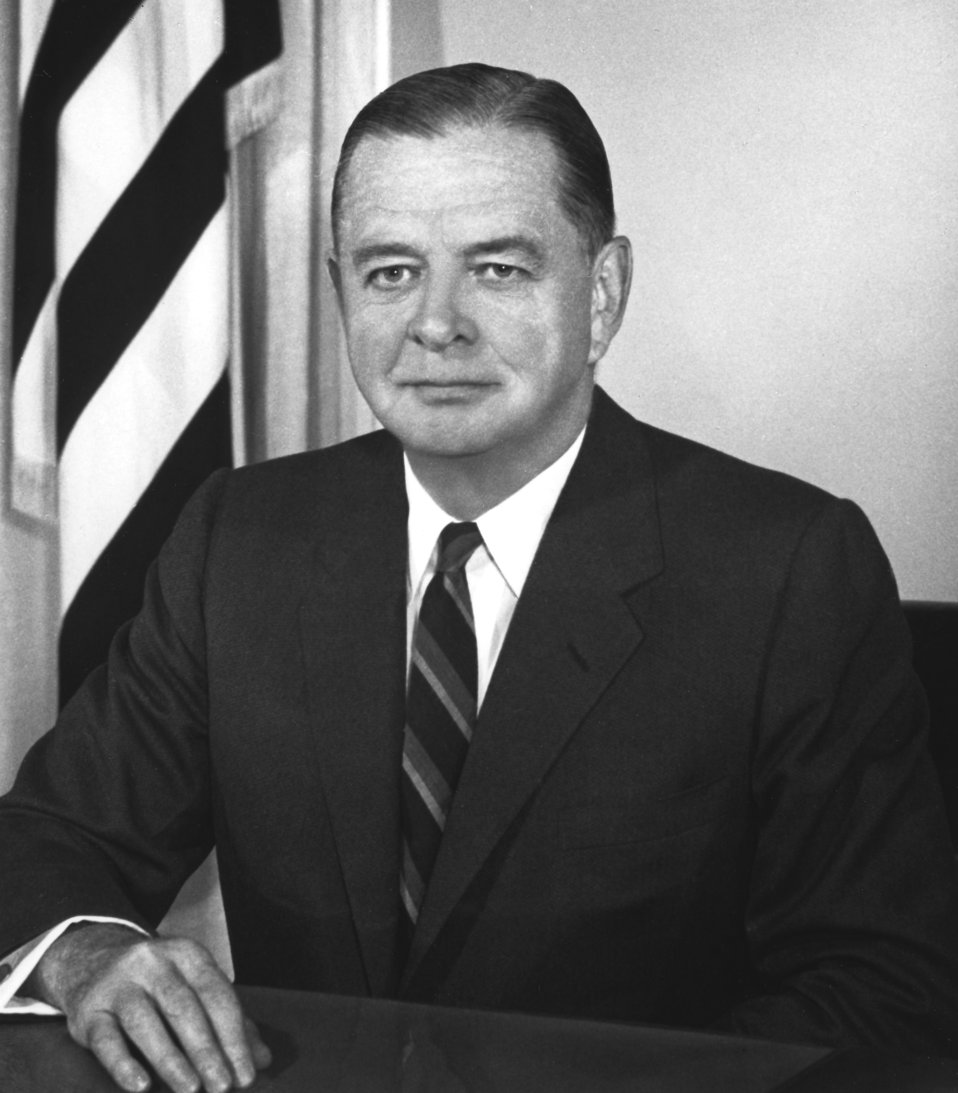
James H. Douglas Jr. was the fifth Air Force secretary and served from May 1, 1957 to Dec. 10, 1959.